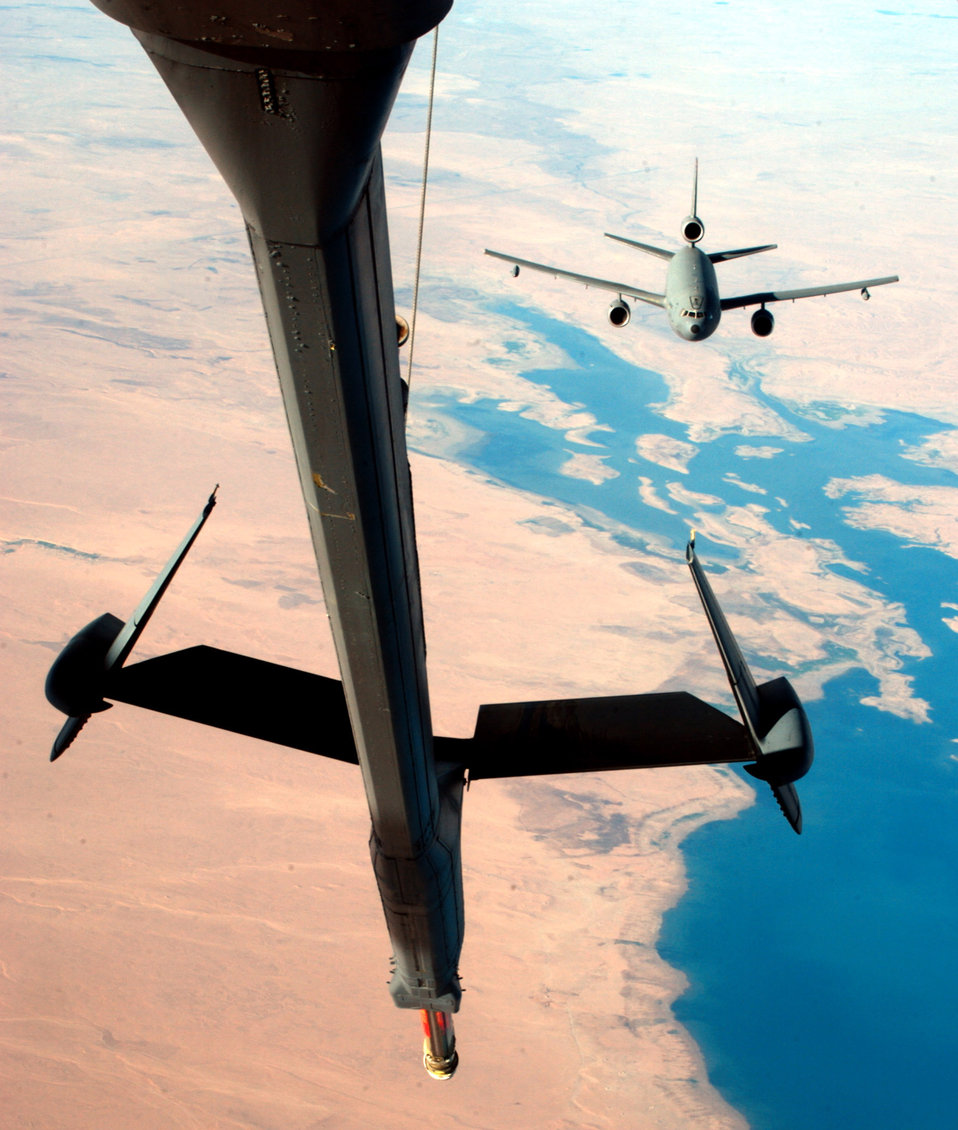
The pump in the sky

OVER IRAQ -- A KC-10 Extender, piloted by Capt. Melissa Nadeau with 908th Expeditionary Air Refueling Squadron, approaches another KC-10 to transfer fuel while flying missions here recently in support of Operation Iraqi Freedom. The KC-10 Extender can both give and receive fuel.